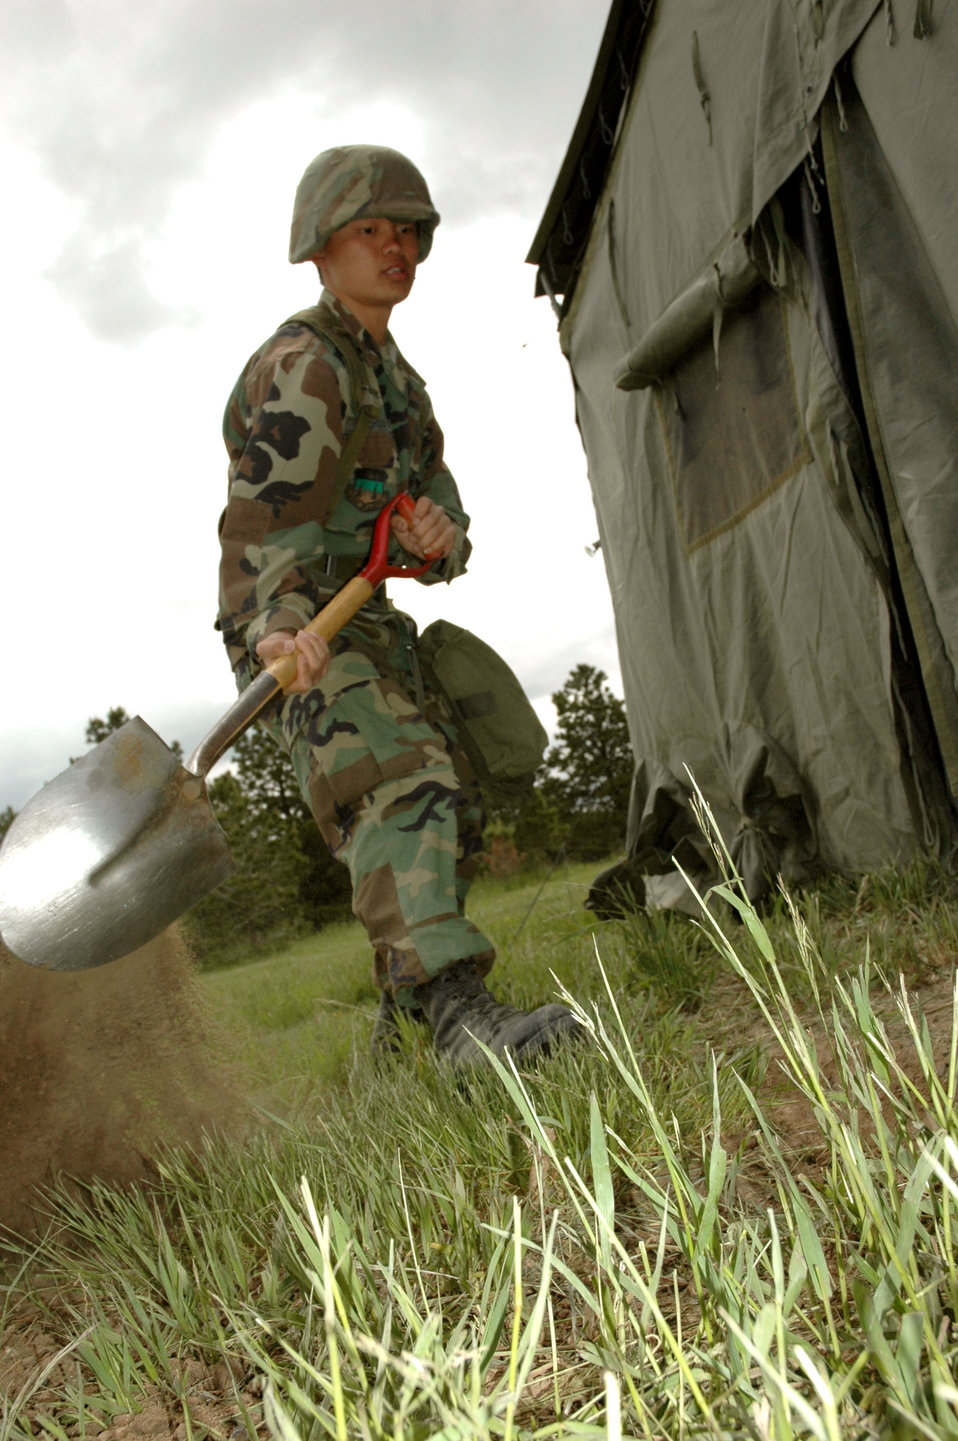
Cadets learn it's a BEAR out there

U.S. AIR FORCE ACADEMY, Colo. -- Cadet 3rd Class Hsi Chou digs a trench around his tent June 10 to keep water from entering if it rains during Global Engagement 2005. This was the first of six groups of cadets to go through the training throughout the summer.